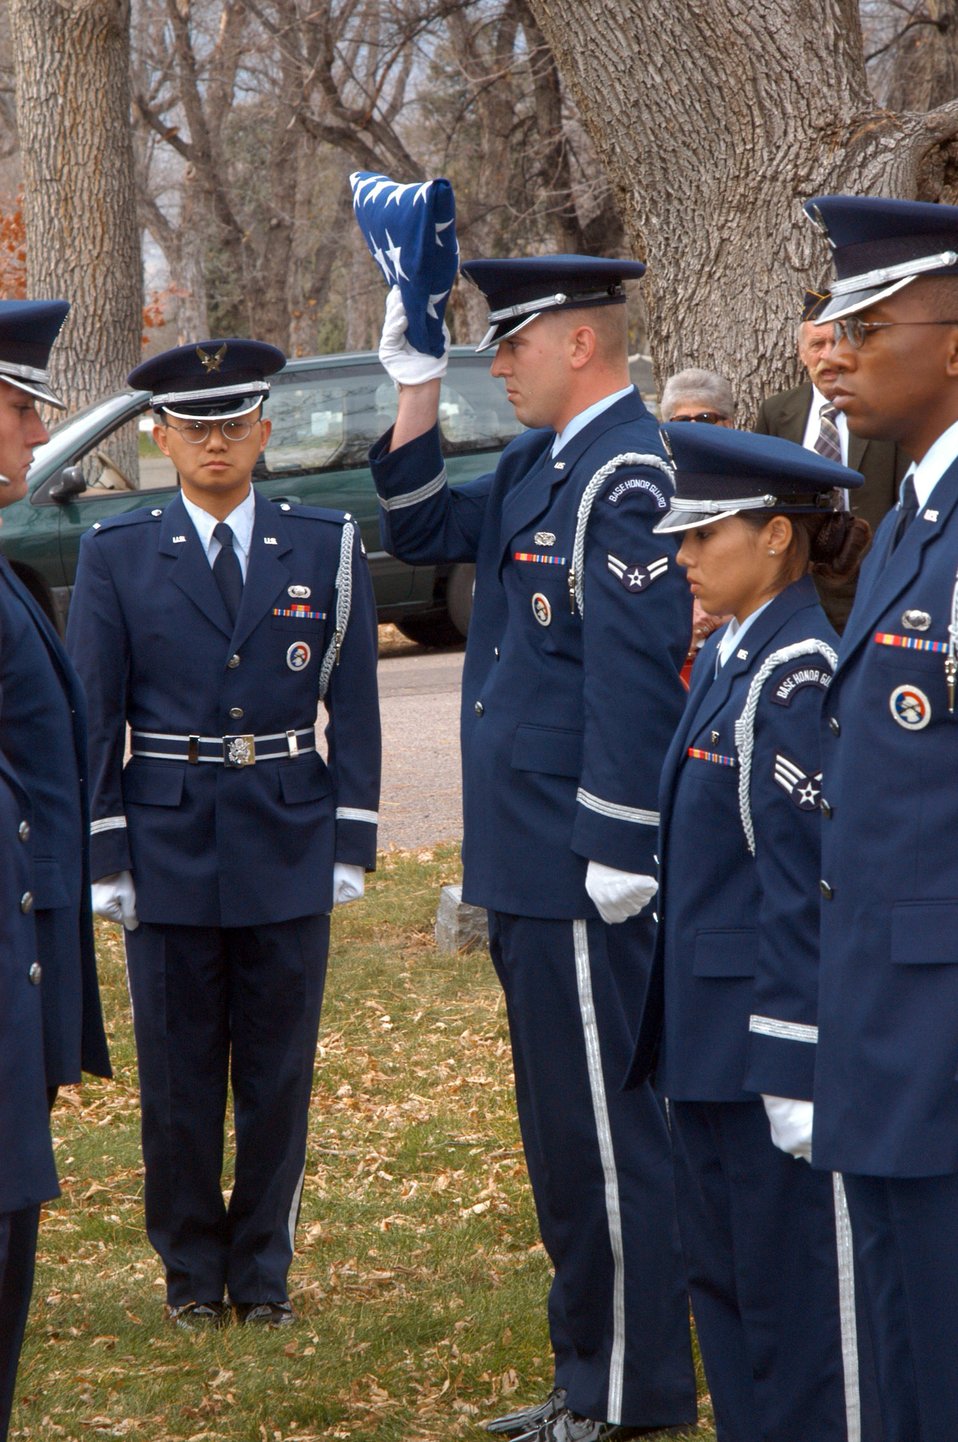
Ambassadors in blue

COLORADO SPRINGS, Colo. (AFPN) -- Airman 1st Class Michzel Zdenek prepares to hand a folded American flag to 1st Lt. Bruce Wang as part of a recent funeral detail. Lieutenant Wang is a member of the 1st Space Operations Squadron. Airmen Zdenek is in the 50th Civil Engineer Squadron.